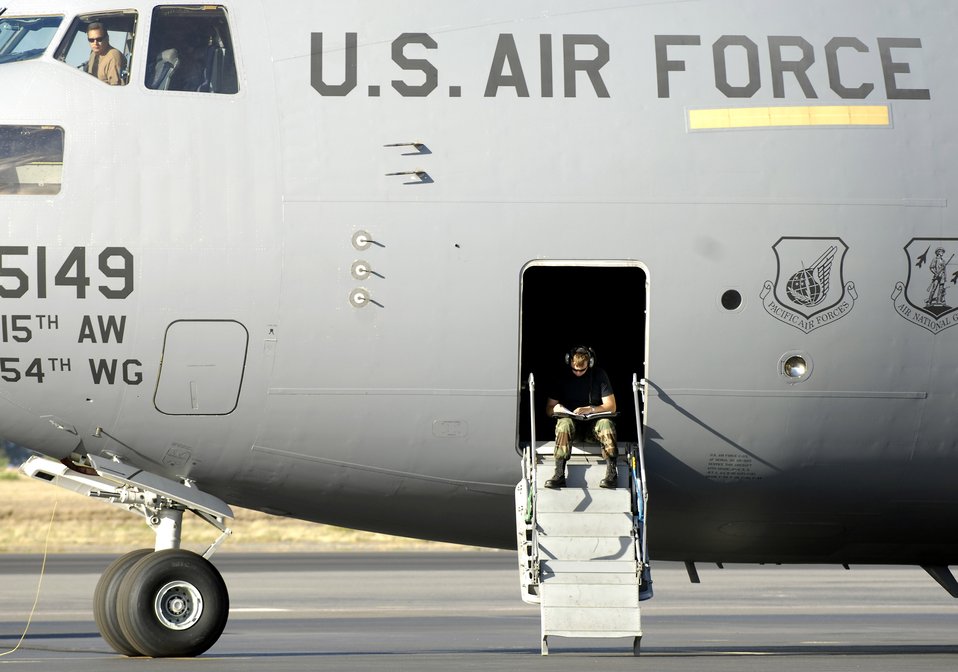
Hickam crew prepares for AMC Rodeo

Crew chiefs look over their maintenance logs June 22 while working on a C-17 Globemaster III at Hickam Air Force Base, Hawaii. The crew chiefs are from the 15th Aircraft Maintenance Squadron.